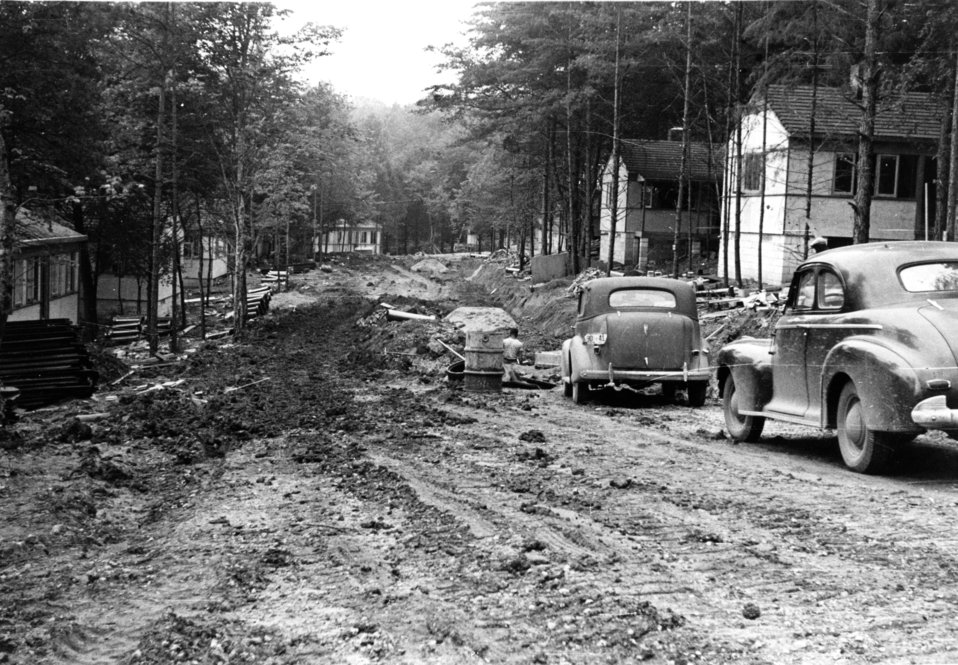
Construction activity at Oak Ridge